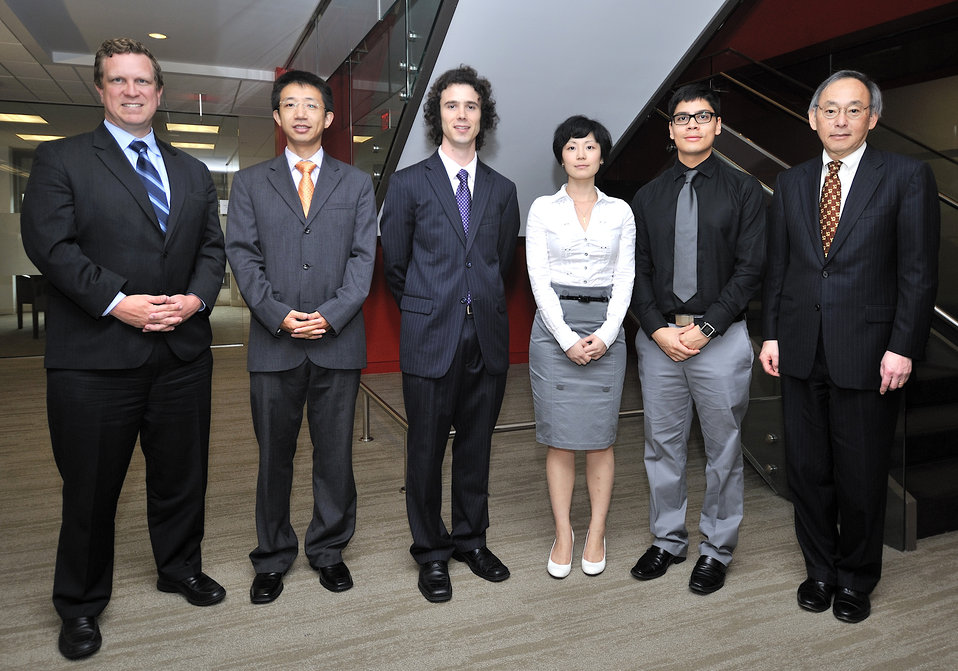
National Clean Energy Business Plan Competition

The National Clean Energy Business Plan Competition inspired nearly 300 university teams across the country to create new businesses to commercialize promising energy technologies developed at U.S. universities and the National Laboratories.